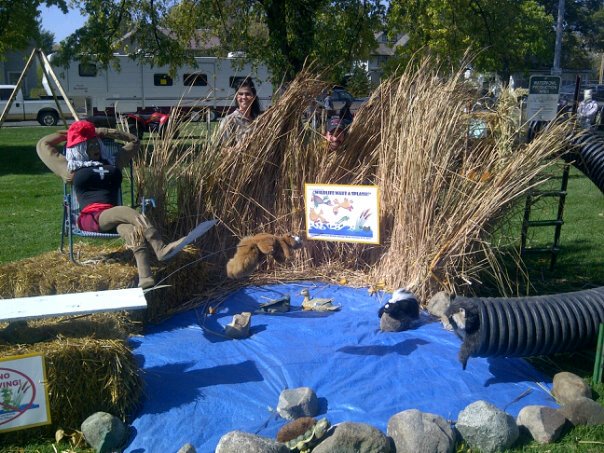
2011 Scarecrow Festival

Staff worked hard at getting this scarecrow scene all done up. It was a lot of fun to work on.